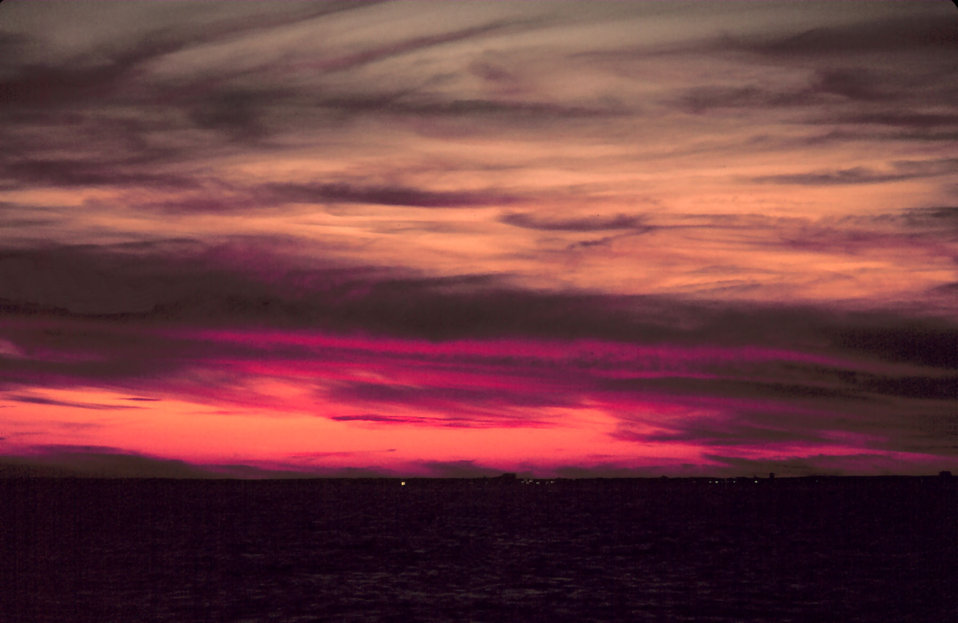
Lurid colors mark a sunrise at sea off the eastern seaboard.